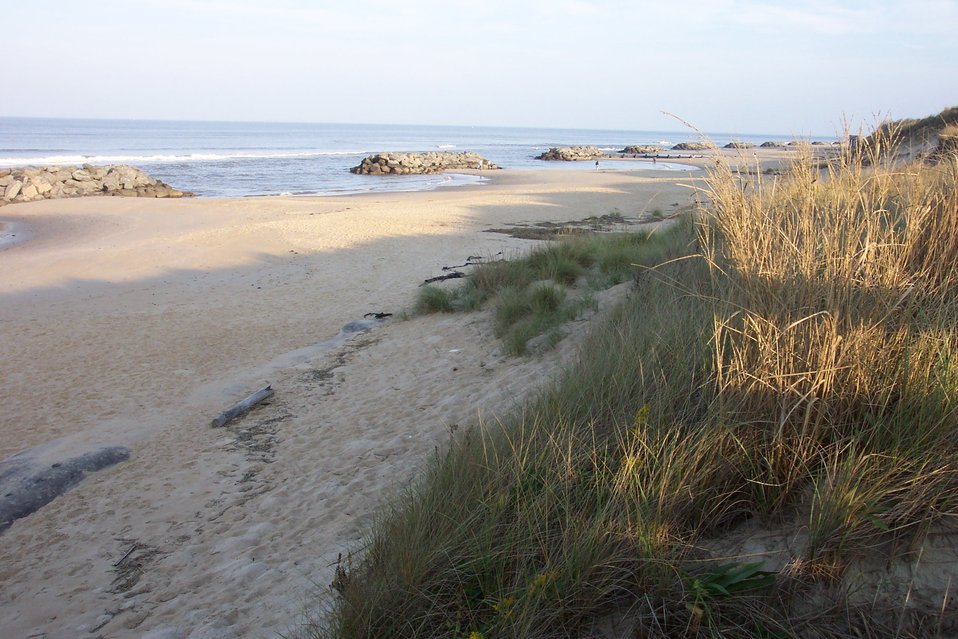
Rock barriers in the surf while erosion barriers are seen at the base of the dunes